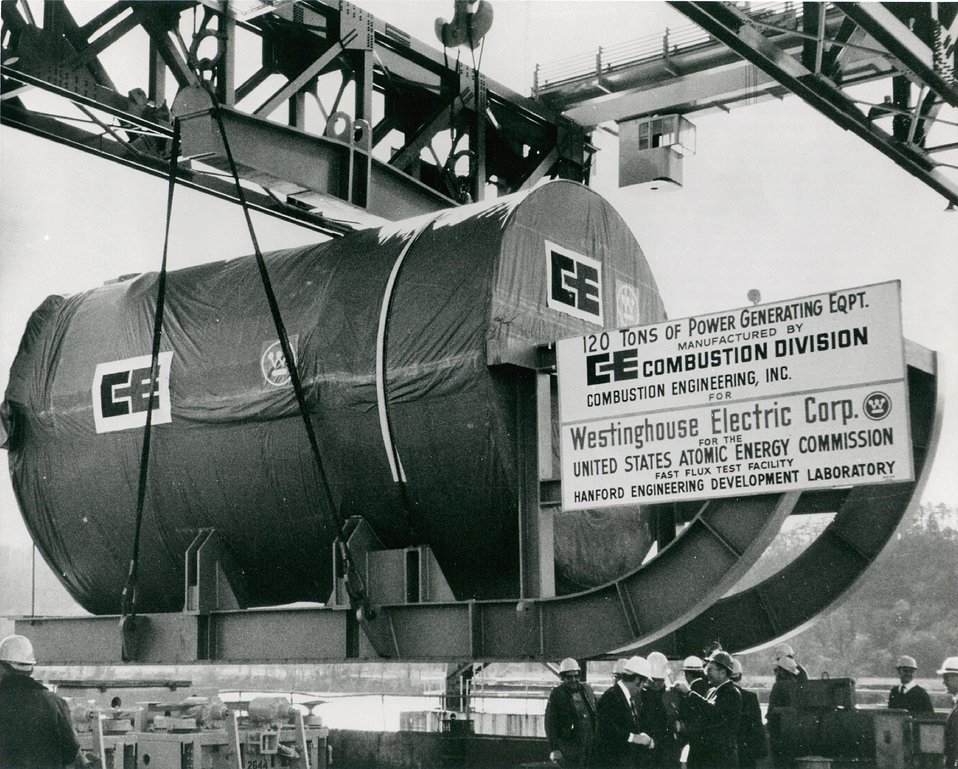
The largest diameter stainless steel nuclear reactor component ever manufactured is shown beginning the 7100-mile journey from Chatanooga, Tennessee to Richland, Washington. Destination is the Fast Flux Test Facility under construction at the Atomic Energy Commission's Hanford site. c. 1973.